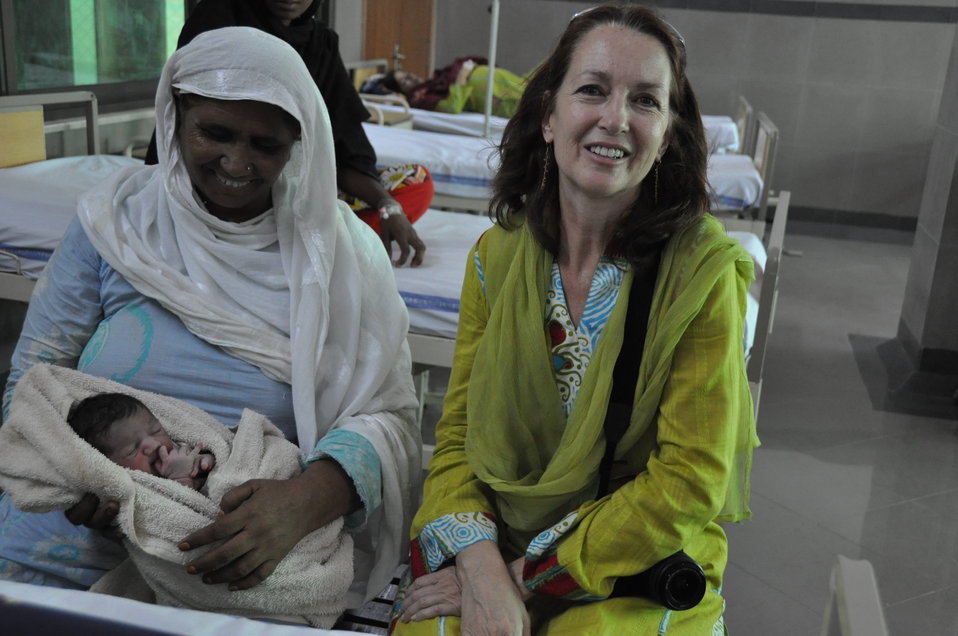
Fatima Jinnah Women's Hospital Multan